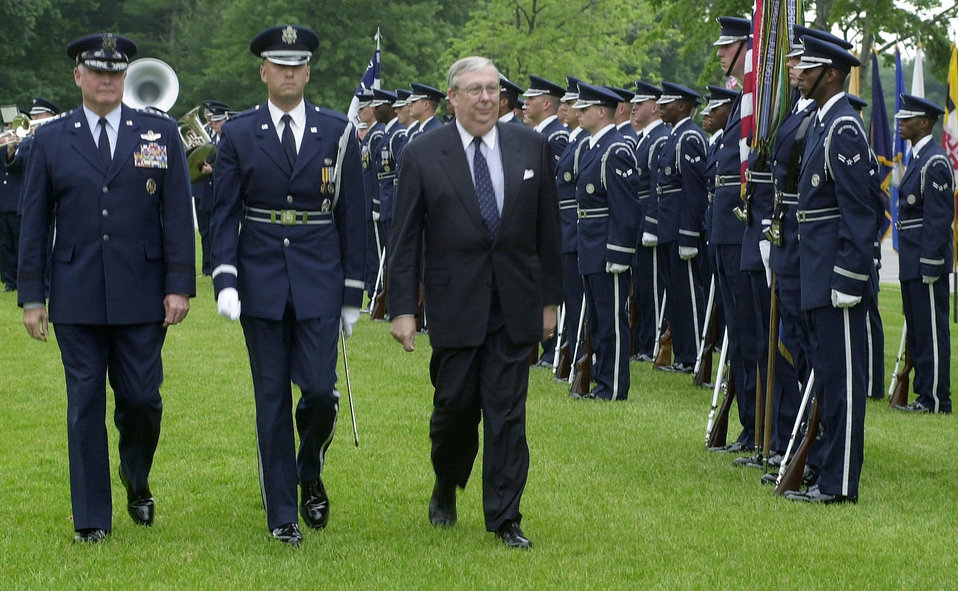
Inspection

WASHINGTON -- The 20th Secretary of the Air Force, Dr. James G. Roche (right) and, his host, Chief of Staff of the Air Force Gen. Michael E. Ryan, inspect the troops during a full honors review and welcome to the Air Force ceremony for the newly sworn in SECAF, Bolling Air Force Base, Washington, D.C., June 6, 2001. Roche and Ryan started the day by testifying before the Senate Appropriations Committee, Subcommittee on Defense which was Roche's first trip to Capital Hill in his capacity as SECAF. Roche was sworn in on June 1, 2001 during a Pentagon ceremony.